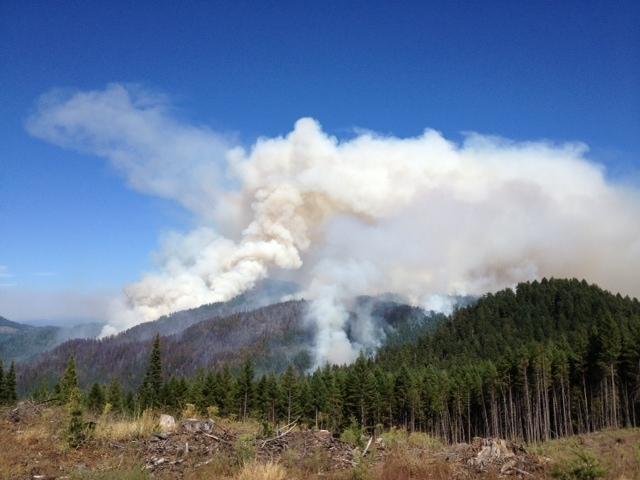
The Whiskey Complex Fire in the Umpqua National Forest near Tiller, OR began by lightning on Jul. 26, 2013 by lighting has consumed approximately 10,466 acres and is 35% contained.